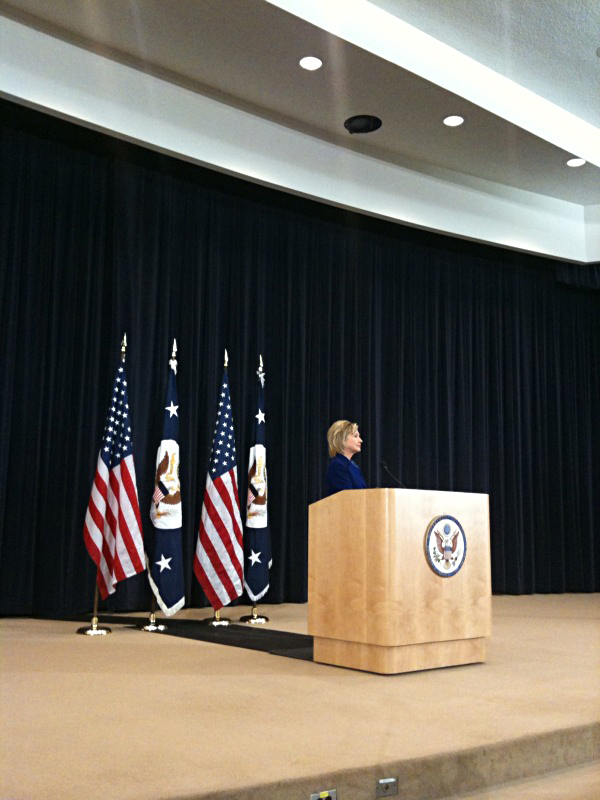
Secretary Clinton at State Department Town Hall

U.S. Secretary of State Hillary Rodham Clinton delivers remarks during a town hall for State Department employees in the Dean Acheson Auditorium, Harry S Truman Building, Washington, DC, Jan. 26, 2010.